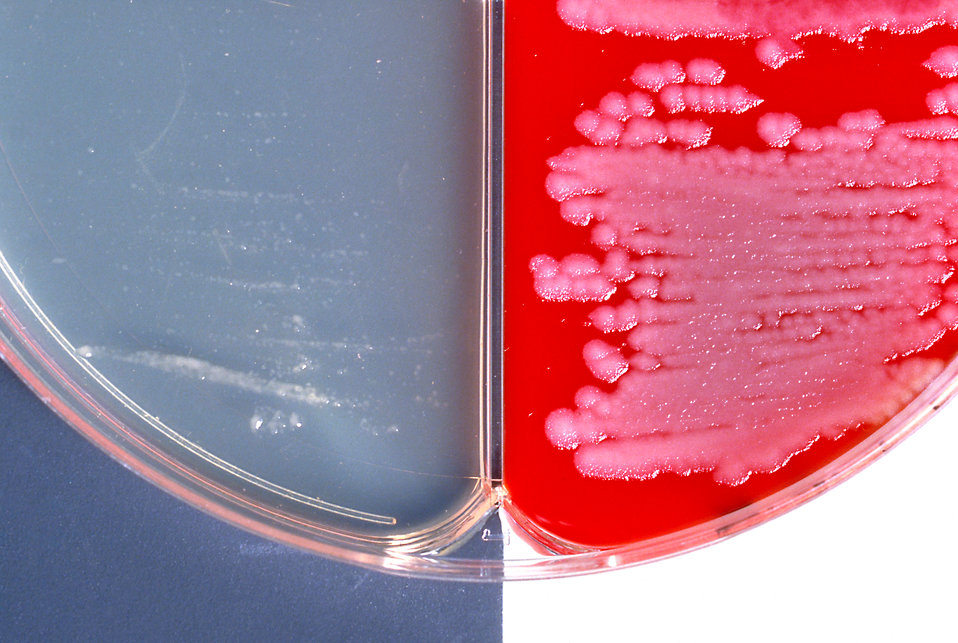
Bacillus anthracis positive encapsulation test is demonstrated using two different agar media.